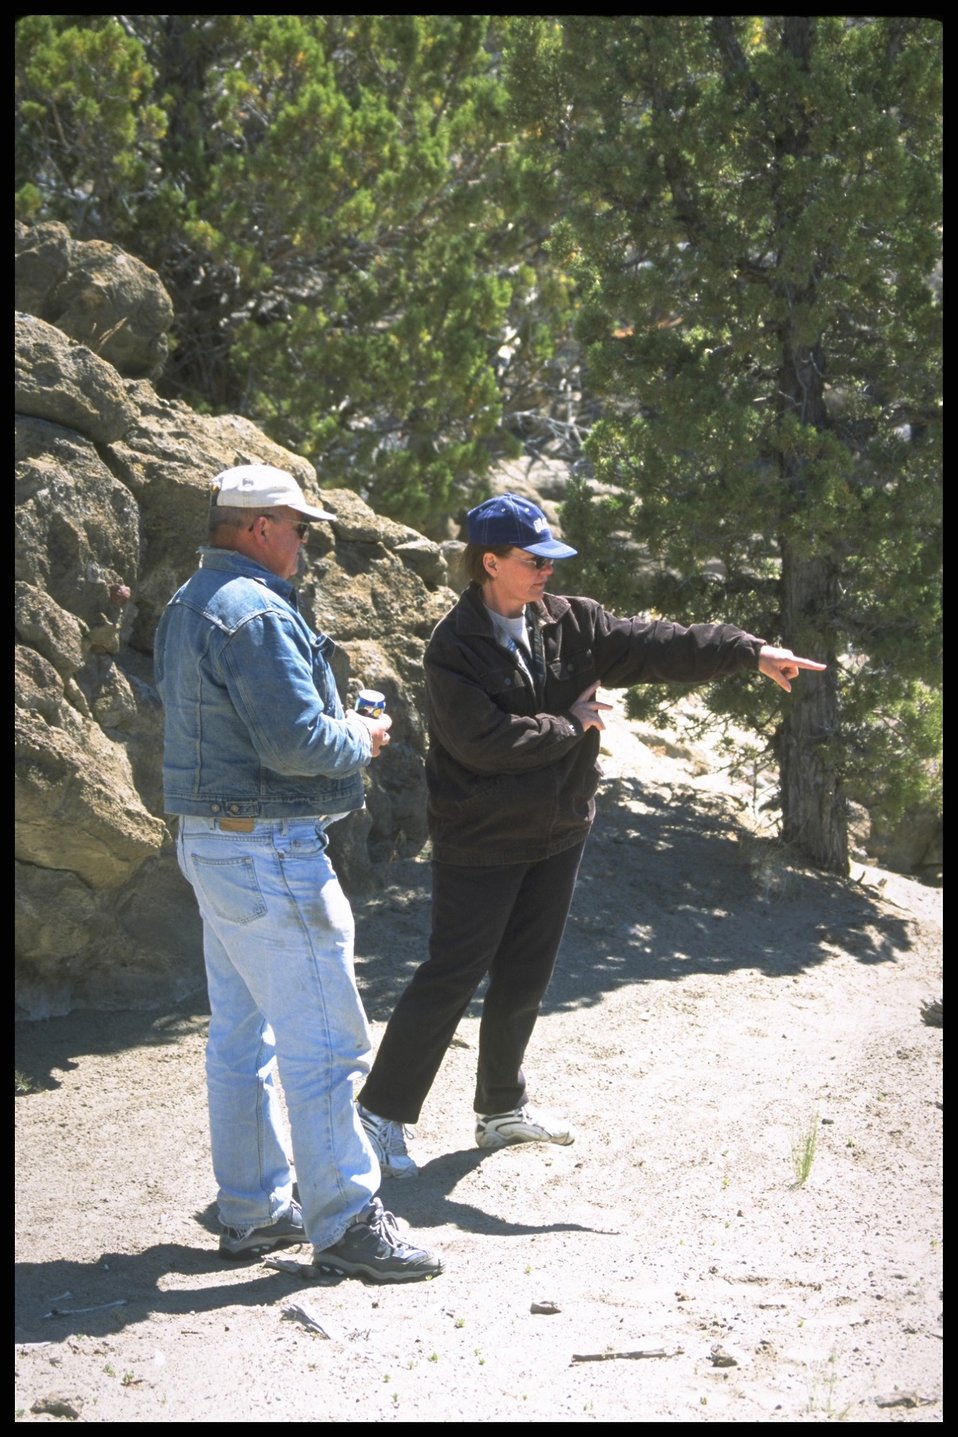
Tourists in Lost Forest area, Lakeview District.